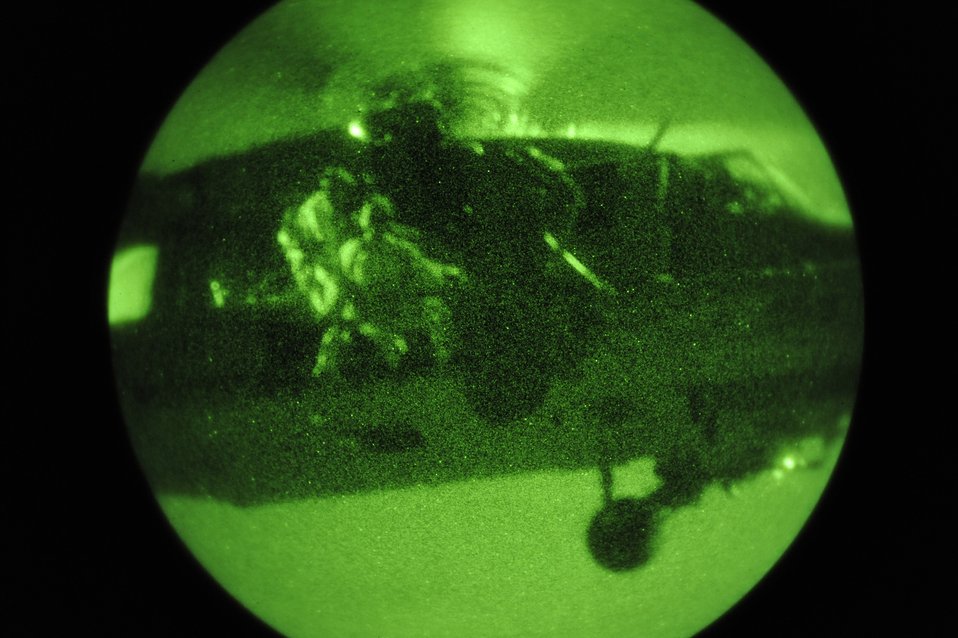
Emerald Warrior

Two military members deploy from an HH-60 Pave Low helicopter Feb 9 during an Emerald Warrior Exercise training scenario. Air Force Special Operations Command officials are hosting Emerald Warrior to train forces in combat scenarios. The exercise runs until Feb. 13.